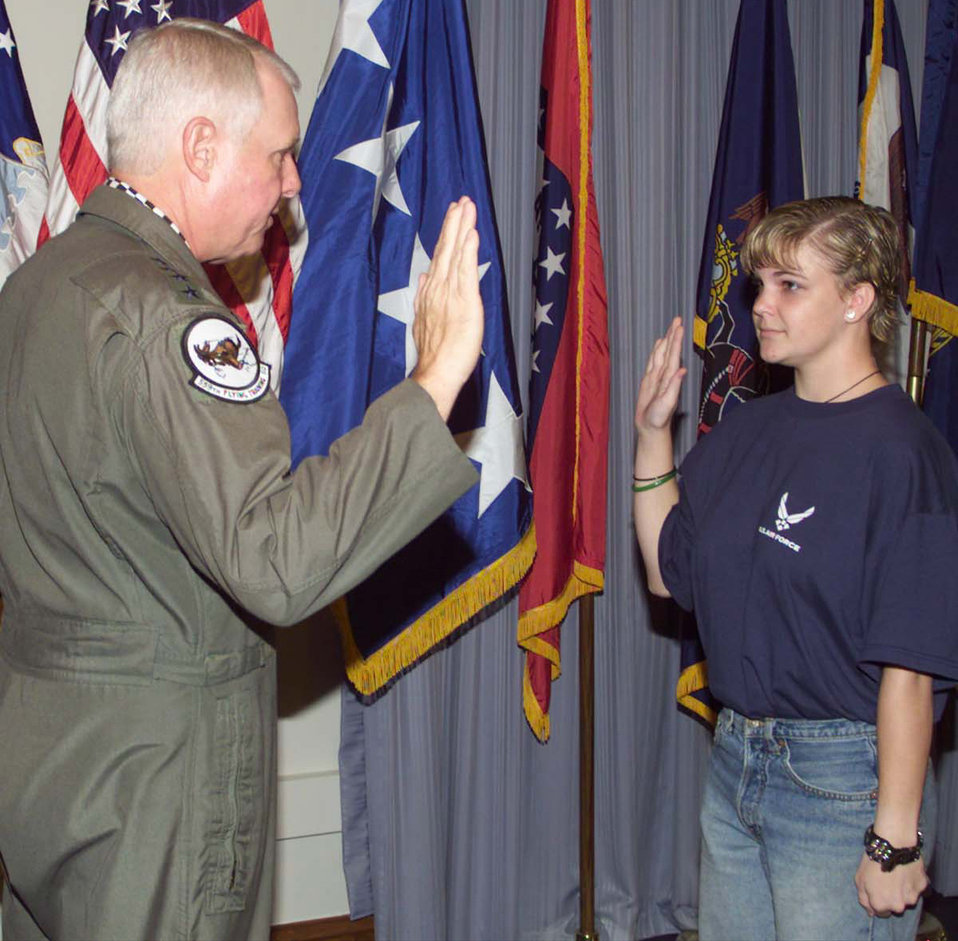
The oath

RANDOLPH AIR FORCE BASE, Texas -- Gen. Hal Hornburg, commander of Air Education and Training Command, enlists Christina Stuchly into the Air Force Sept. 20 at AETC headquarters. She is the 34,600th recruit to enlist into the Air Force this year, which was the fiscal year 2001.